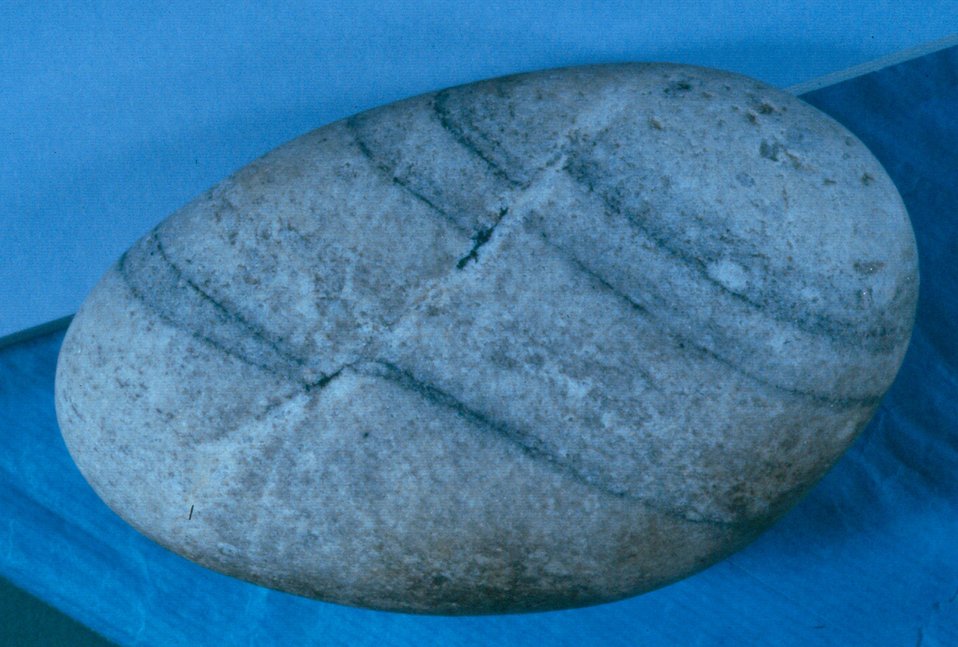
Big Wood River Pebble Shoshone Field Office USRD Upper Snake River District